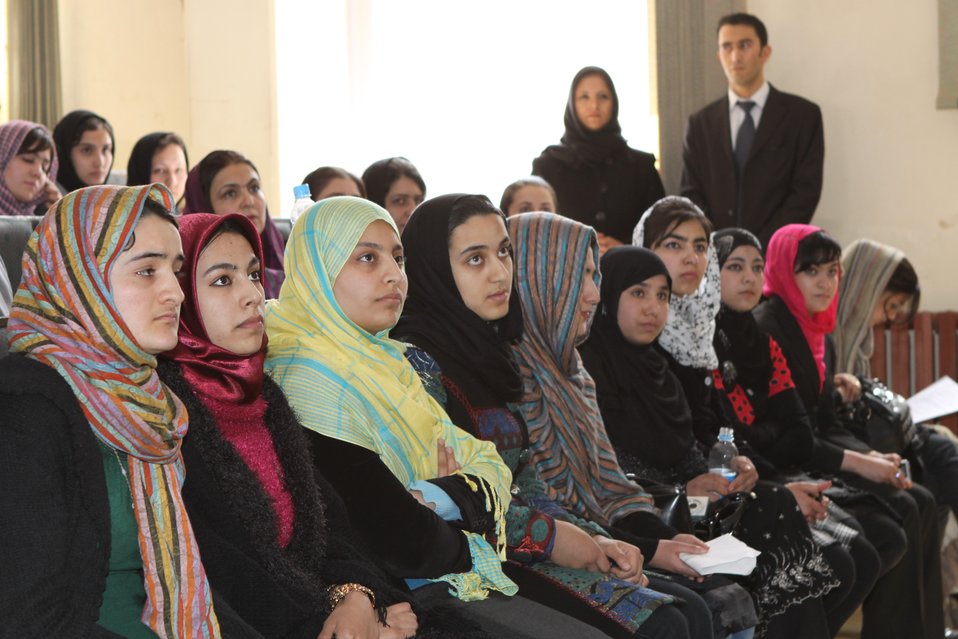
Female University Students Complete Internship

Kabul, Afghanistan | March 16, 2011 – In response to a demand for qualified Afghan engineers, Kabul University celebrated completion of an intensive five-month Mentor Protégé Training Program today by 10 female fourth year university students. The Training Program is a joint effort between the Government of the Islamic Republic of Afghanistan, the U.S. Agency for International Development (USAID), and the Universities of Kabul, Kandahar, Alberoony in Kapisa, Shiekh Zayed in Khost. The graduation ceremony highlighted collaboration with these national institutions in building the technical skills of young Afghans, made possible by USAID.

Four of the interns are engineers, while the remaining six are from the faculties of computer science, economics, and psychology.

Speaking about the event, H.E. Minister of Public Works Abdul Qudus Hamidi said, “The future of Afghanistan lies in developing the skills of our youth, and the engineering skills of these graduates today represent a small but important step forward for the country.”

Keynote speakers at the ceremony included H.E. Deputy Minister of Higher Education Abdul Rahim; USAID Senior Deputy Mission Director Robert Hellyer; and Chancellor of Kabul University Professor Hamidullah Amin. Approximately 150 people, including current and former students attended the graduation.

Launched last year, the Mentor Protégé Training Program has provided qualifying students the opportunity to intern with USAID’s Strategic Provincial Roads-South and East Afghanistan project and gain practical experience in a real work environment. The goal of the program was to offer interns the opportunity to gain hands-on experience to reinforce their formal studies. A total of 30 students from four national universities have benefitted from this program.

“The promotion of women’s rights is integrated into the overall U.S. Government development strategy and can be found in key programs, including education, healthcare, security, rule of law, political participation, agriculture, and economic development,” said Robert Hellyer. “The U.S. Government is committed to the Afghan leadership of programs that directly enhance development, particularly as it relates to women’s issues.”

This event also highlighted the learning achievements of students and emphasized the importance of hands-on internship programs. The curriculum is designed to instill students with the knowledge and confidence to qualify for engineering positions upon completion of their fourth year at their respective universities.